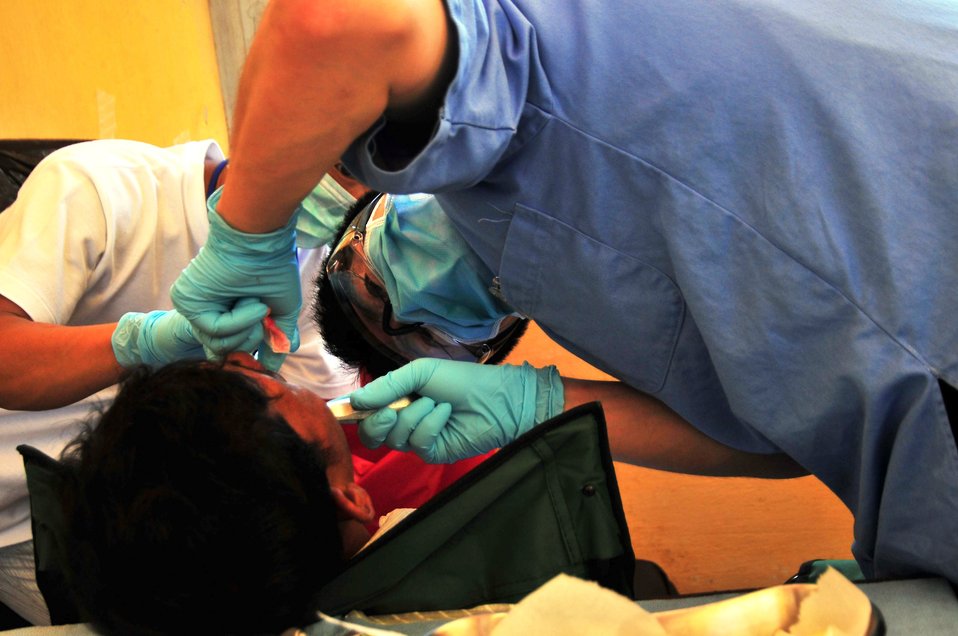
A Japanese Dentist Gives a Young Cambodian Patient a Dental Exam

A Japanese dentist from the Japanese Maritime Self Defense Force JDS Kunisaki (LST 4003) gives a young Cambodian patient a dental exam during a dental civic action program in support of Pacific Partnership 2010 on June 24, 2010, in Sihanoukville, Cambodia. The Military Sealift Command hospital ship USNS Mercy (T-AH 19) is in Cambodia conducting the fifth in a series of annual U.S. Pacific Fleet humanitarian and civic assistance endeavors to strengthen regional partnerships.